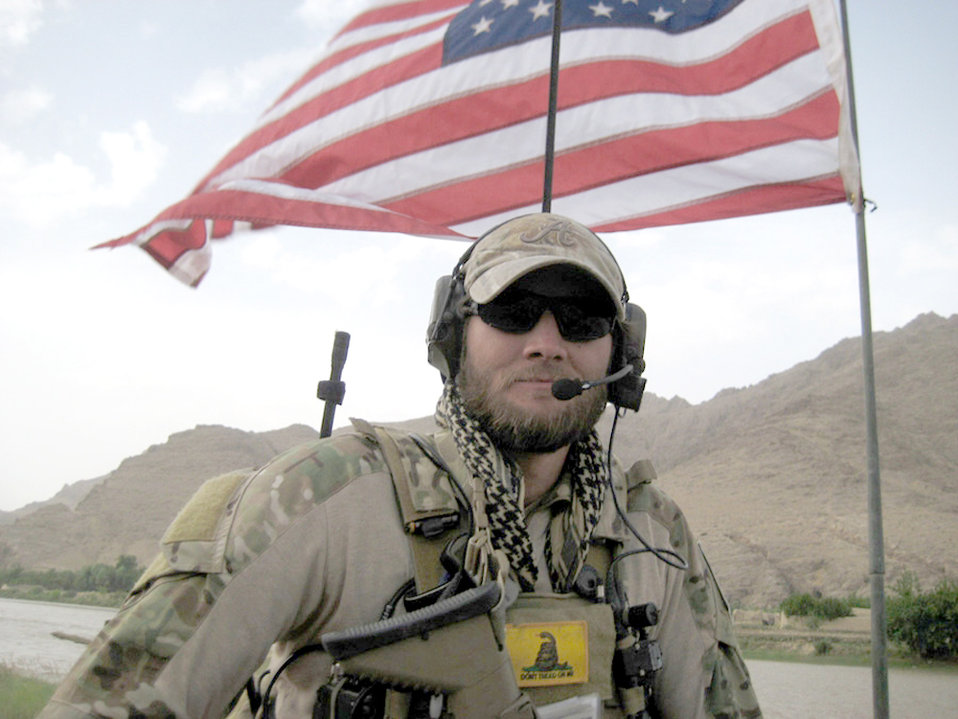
Memorial held for fallen special forces Airman

Senior Airman Mark Forester was killed Sept. 29, 2010, in Uruzgan province, Afghanistan, when his special forces unit came under attack. Airman Forester was assigned to the 21st Special Tactics Squadron at Pope Air Force Base, N.C.